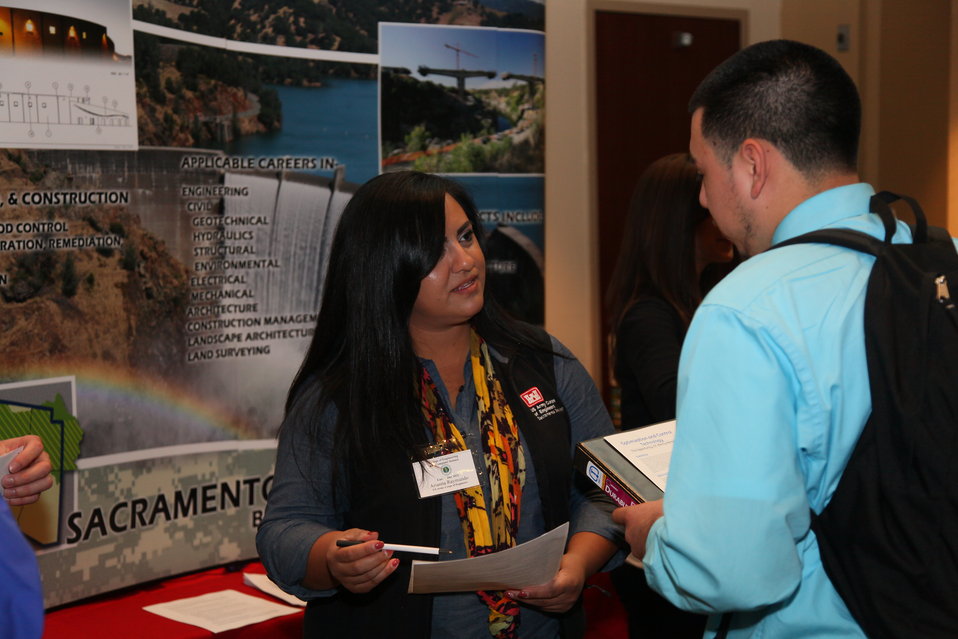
Engineers talk careers at Sac State

Arianna Raymundo (left), a geotechnical engineer with the U.S. Army Corps of Engineers Sacramento District, talks with a student about career opportunities in engineering at a California State University-Sacramento career fair in Sacramento, Calif., March 2, 2012. The event offered CSUS students the opportunity to connect with more than 70 employers in the fields of engineering and computer sciences.